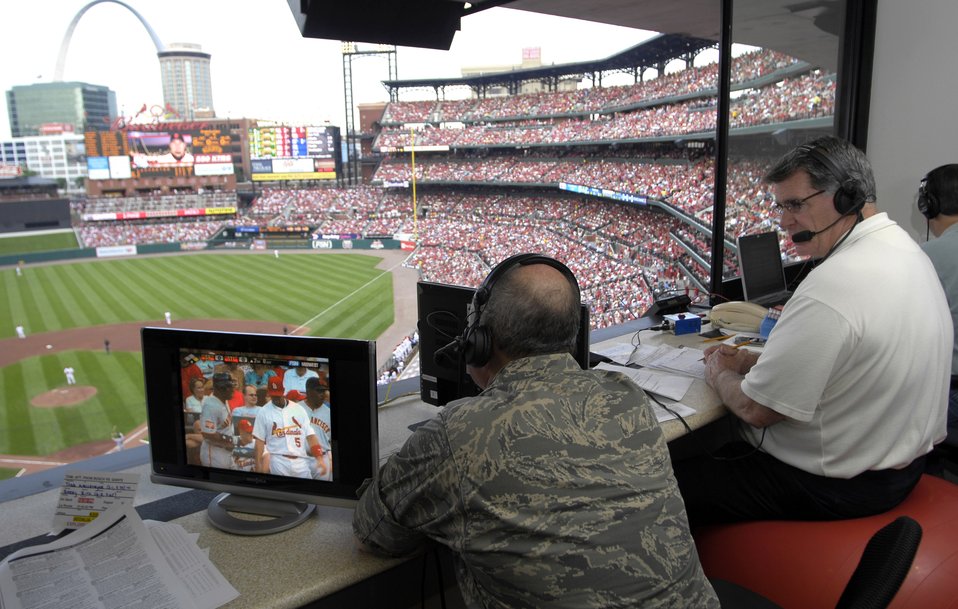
Air Force week in St. Louis

Gen. Duncan J. McNabb, Air Mobility Command commander at nearby Scott Air Force Base, Ill, talks with Mike Shannon, voice of the St. Louis Cardinals, during the Cardinals- Giants baseball game July 7. The general had participated in several pregame events that were part of Air Force Week St. Louis.